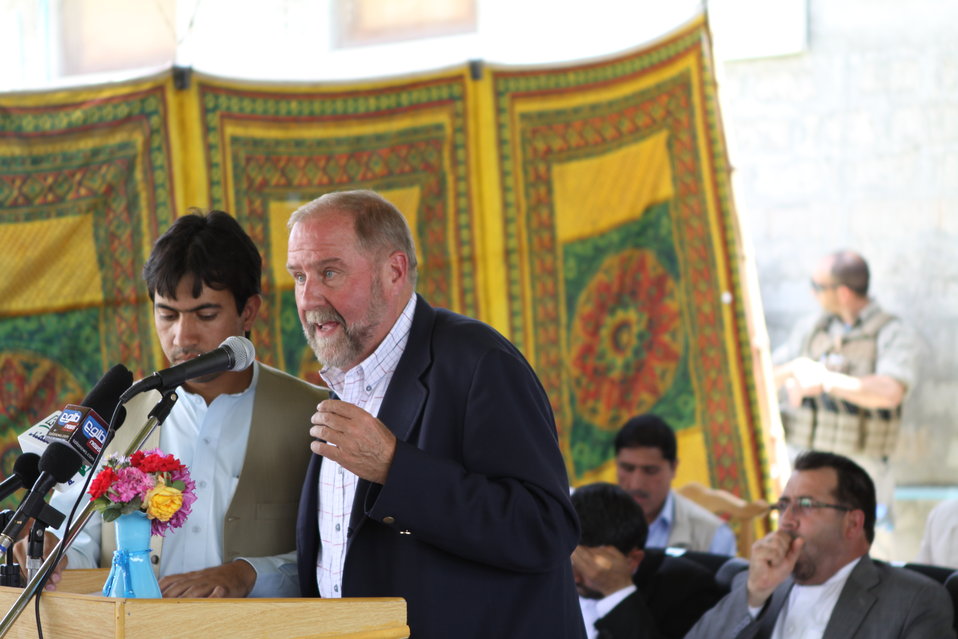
Bolan Poultry Farm